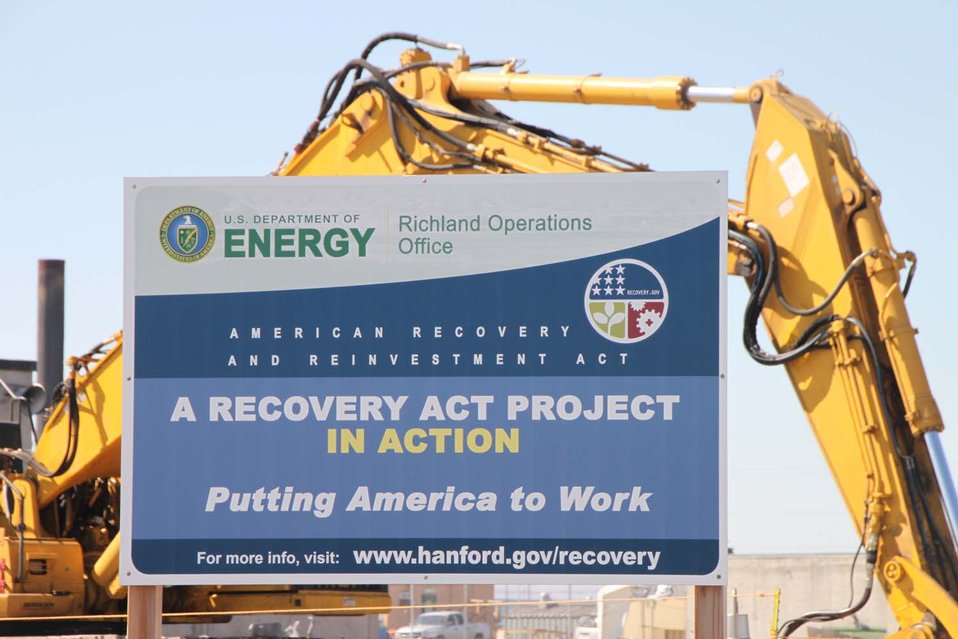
Hanford Recovery Act work

Recovery Act-funded work at the Hanford site.